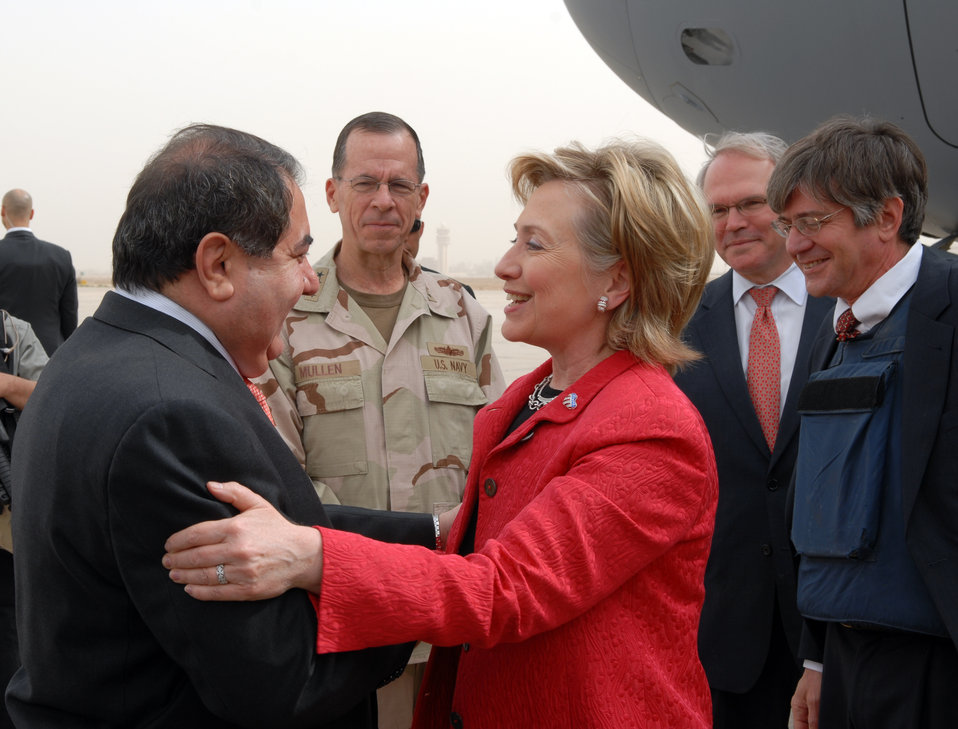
Secretary Clinton Arrives in Baghdad

Upon her arrival in Baghdad, Iraq on April 25, 2009, U.S. Secretary of State Hillary Rodham Clinton is greeted by newly arrived U.S. Ambassador to Iraq Christopher R. Hill, Chairman of the Joint Chiefs of Staff Admiral Michael Mullen, and Iraq’s Minister of Foreign Affairs Hoshyar Zebari. Deputy Secretary James Steinberg (to the far right) looks on.